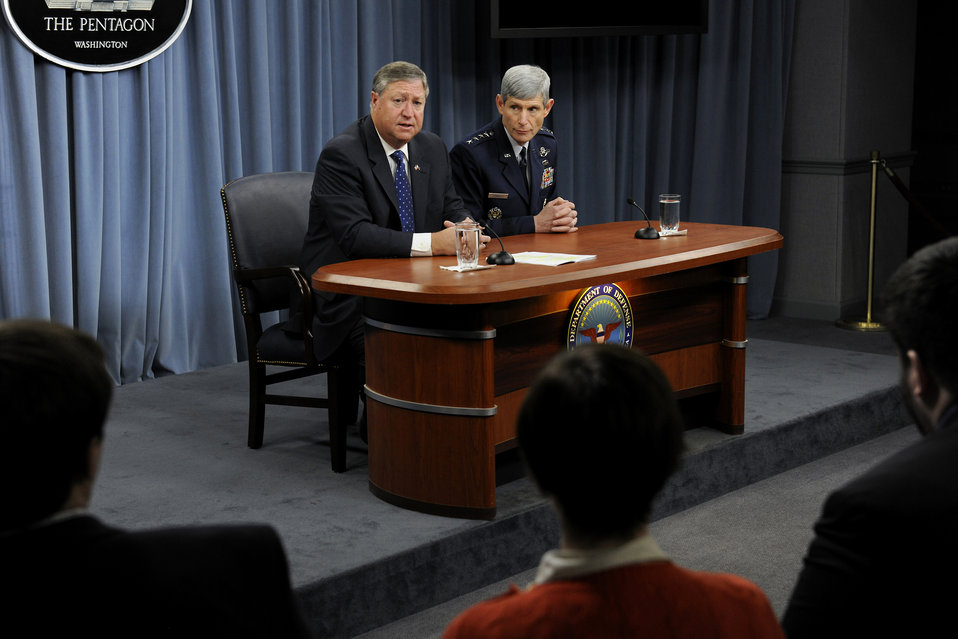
AF Force Structure Overview

Secretary of the Air Force Michael Donley and Air Force Chief of Staff Gen. Norton Schwartz explain the Air Force's Force Structure overview during a Pentagon press briefing on Feb. 3, 2012.